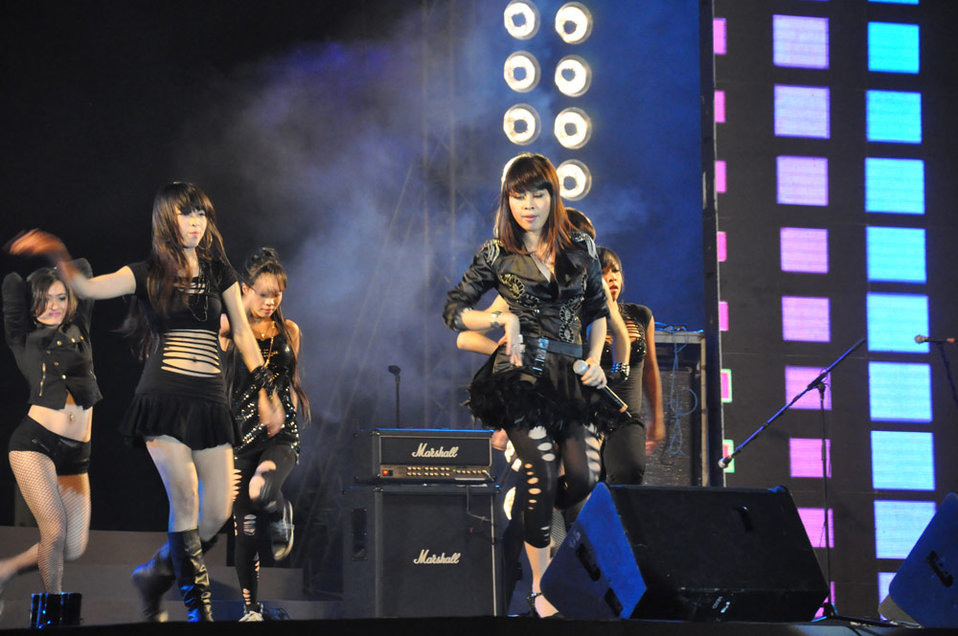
USAID Vietnam and MTVEXIT against Human Trafficking

Hanoi concert, March 27, 2010